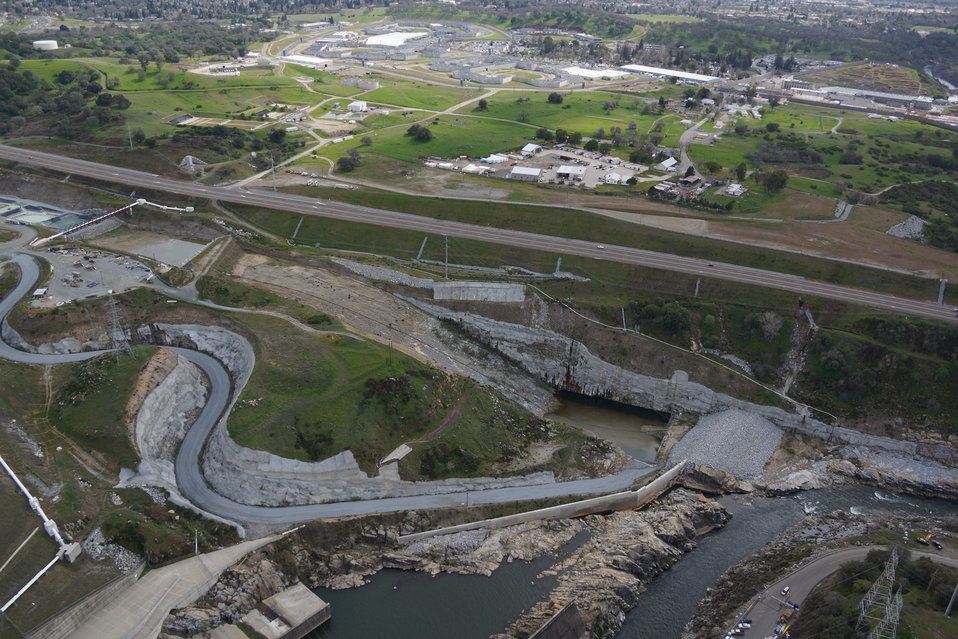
Aerial View of Folsom Dam Auxiliary Spillway

An aerial view shows the entire construction site of the Folsom Dam auxiliary spillway March 6, 2013. Excavation began in 2011 to remove 3.5 million cubic yards of rock and soil from the site. In 2012, the first steel and concrete were placed for the control structure—essentially a second dam—that will stand as tall as the Statue of Liberty when completed. The completed dam and chute will include 350,000 cubic yards of concrete, enough to line up concrete trucks from Sacramento to Los Angeles, and 24 million tons of steel, enough to build two Eiffel Towers. The project is estimated to be completed by October 2017 and is one piece of a larger plan to help the Sacramento region reduce the risk of flooding to a one-in-200 chance for flooding in any given year.